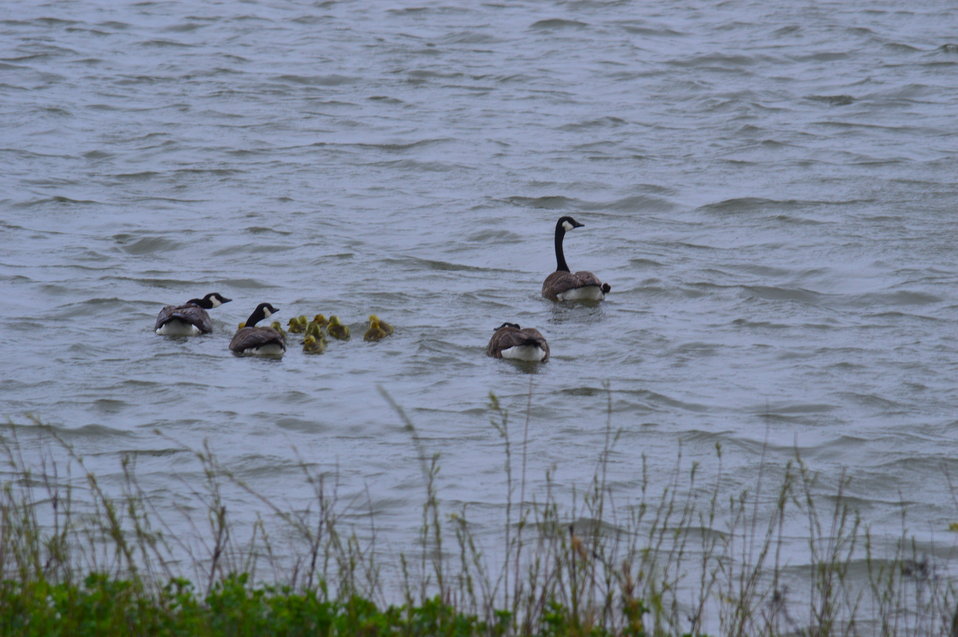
Canada geese and goslings

Scenery and wildlife and Audubon National Wildlife Refuge in North Dakota.